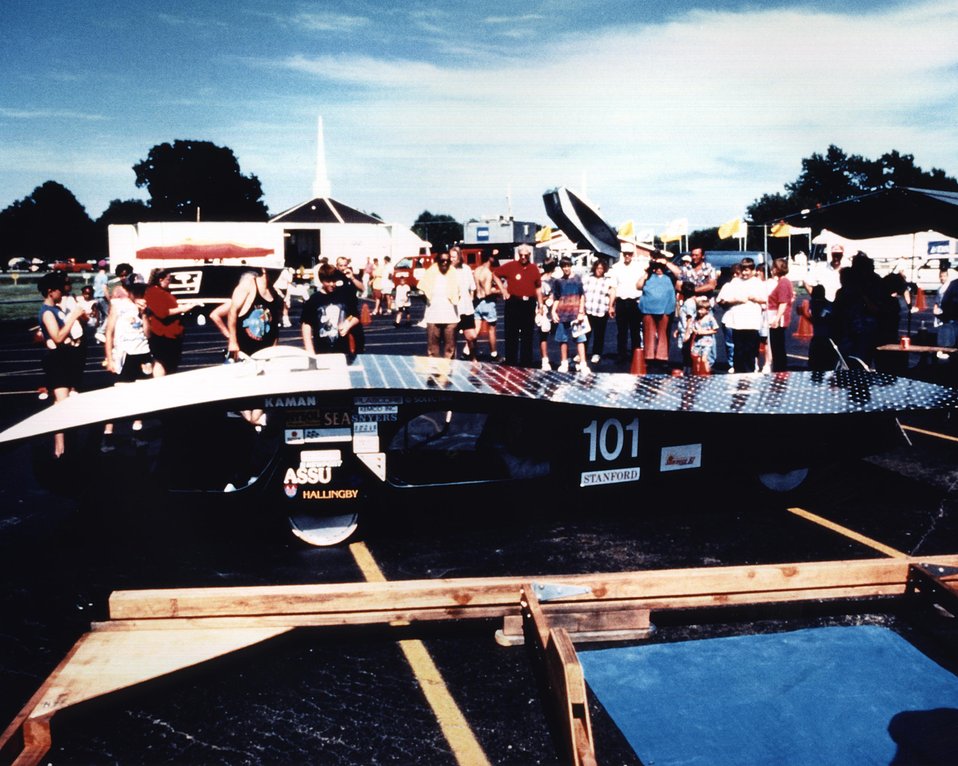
STANFORD UNIVERSITY IN CA ENTERED 'SUNBURNER' WHICH CAME IN FIFTH. THE UNIVERSITY SOLAR CAR PROJECT IS AN INDEPENDENT STUDENT EFFORT WITH A FIVE YEAR HISTORY.